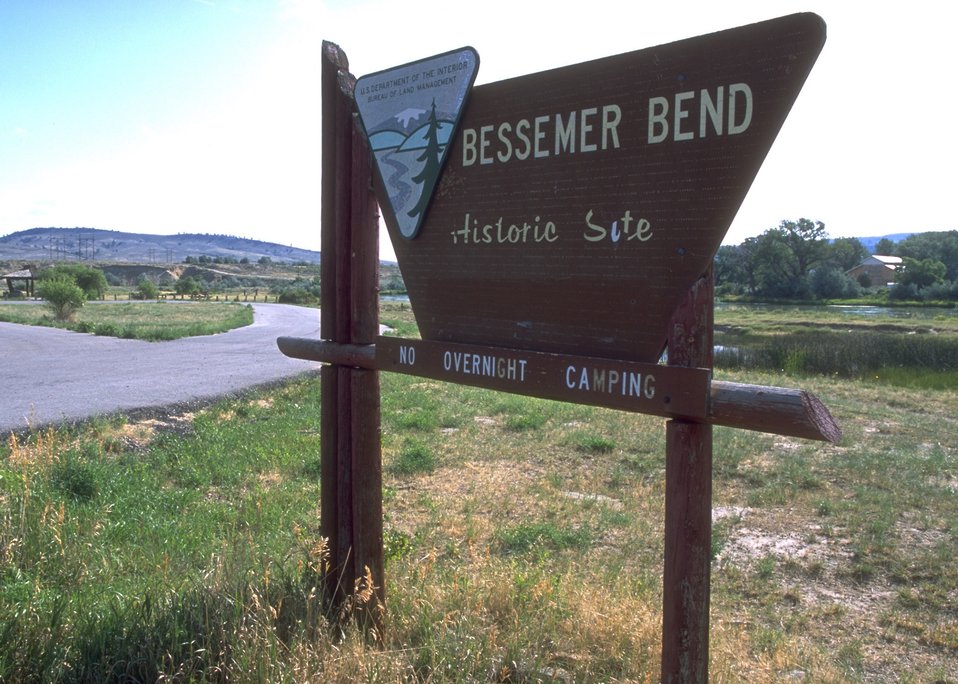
Bessemer Bend crossing on the Oregon Trail, North Platte River, Casper Field Office.